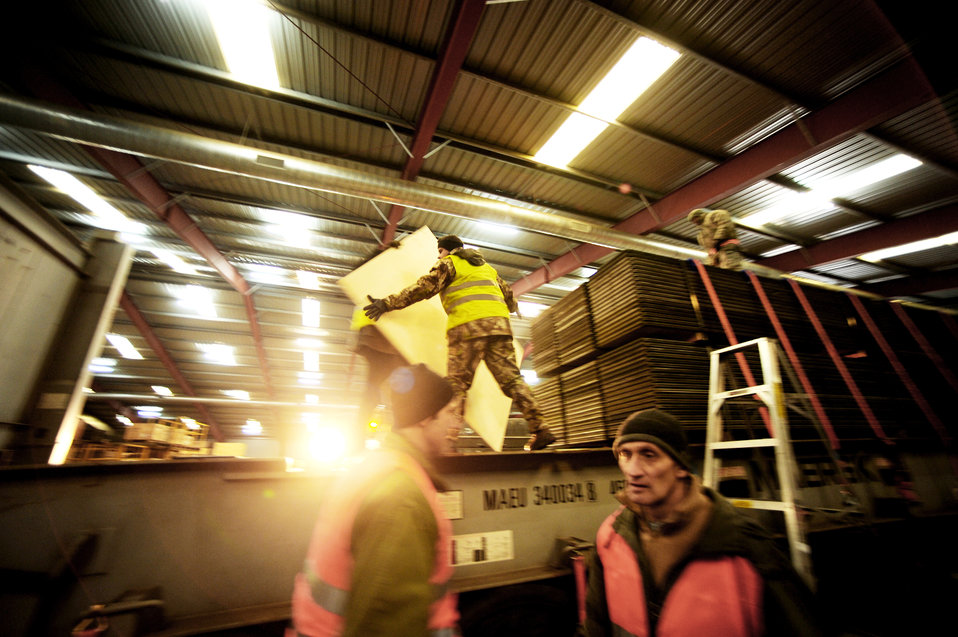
U.S., Luxembourg partnership support surge

Air Force and local members of the Warehouses Service Agency load an AM-2 matt landing strip Feb. 22, 2010, at the Central Region Storage Facility, Sanem, District of Luxembourg, in support of ongoing war efforts. The Air Force members are from the 86th Material Maintenance Squadron, Ramstein Air Base, Germany.